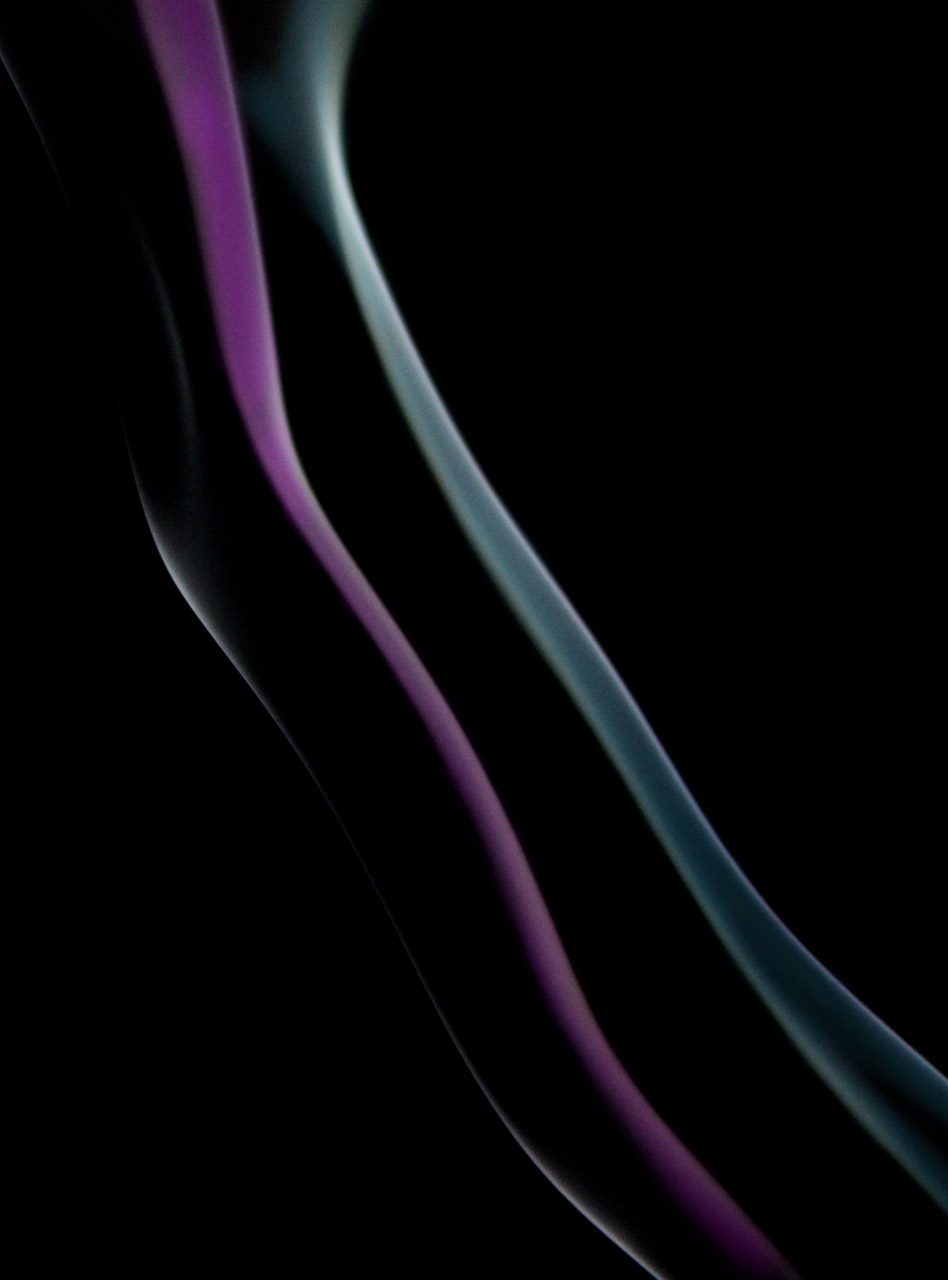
Smoke

Colorful smoke.